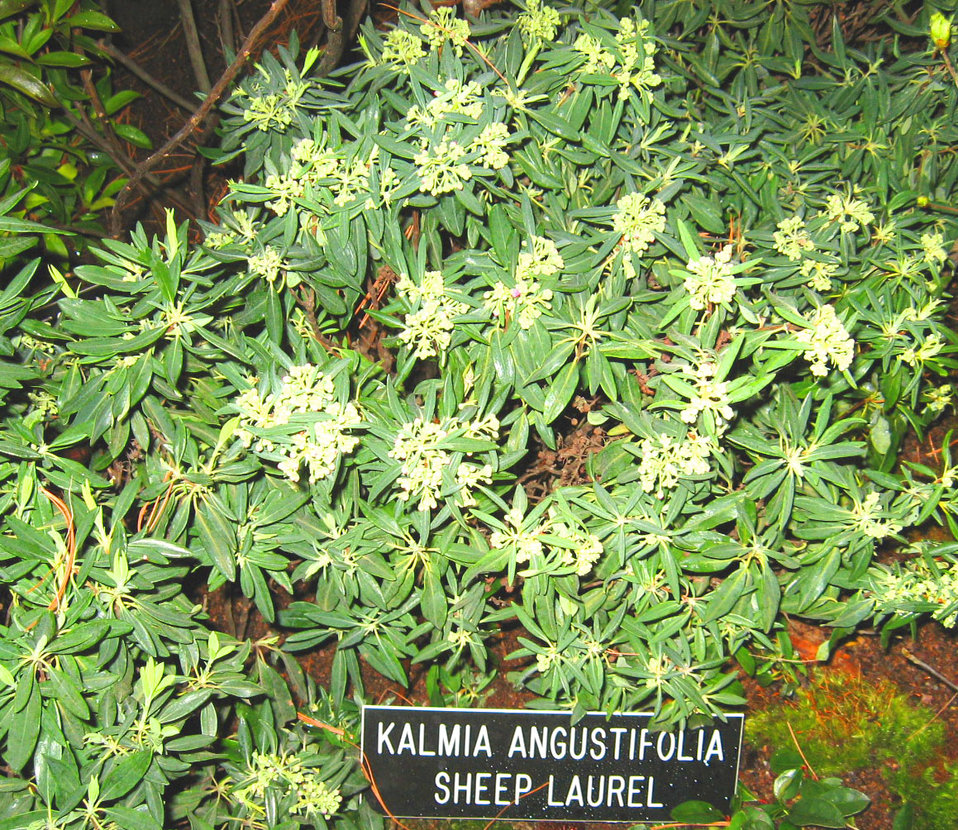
Sheep laurel

Kalmia angustifolia (Sheep laurel), a native plant

Learn more about EPA’s Exhibit at the 2010 Philadelphia International Flower Show:
www.epa.gov/reg3esd1/garden/flower show.htm
www.epa.gov/reg3esd1/garden/flower show plants.htm
www.epa.gov/reg3esd1/garden/pdf/flowershow2010.pdf (6 pp, 864K)